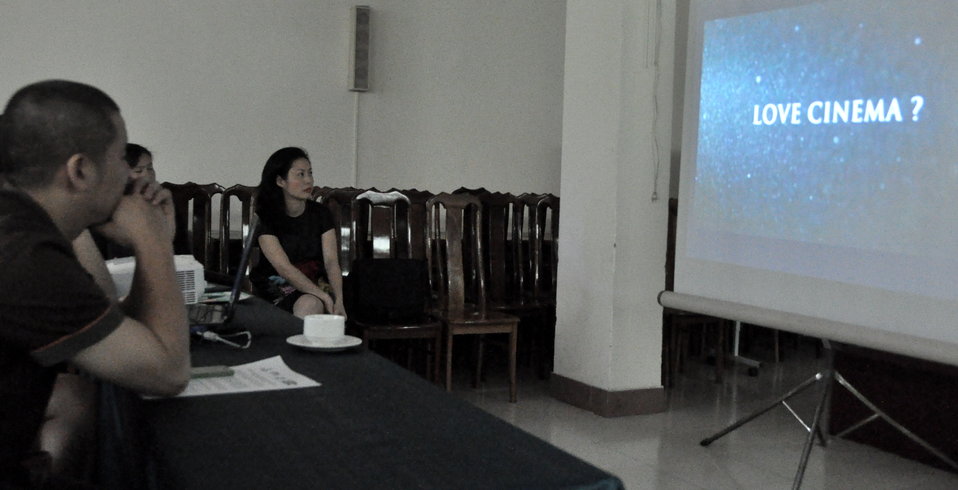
USAID supports scriptwriting contest for students in Hanoi to boost intellectual property rights awareness